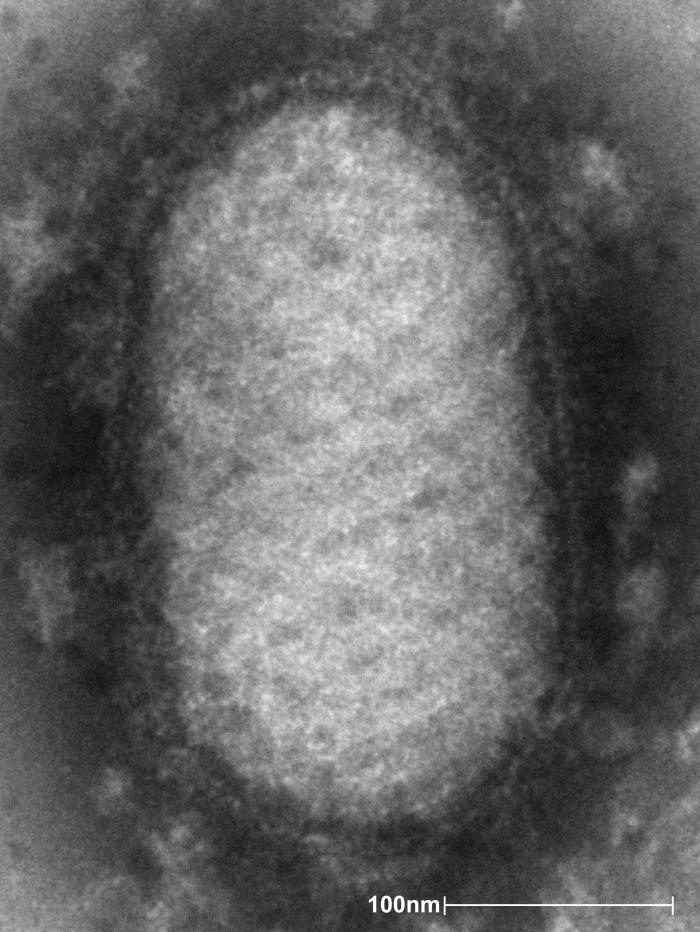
This negative-stained transmission electron micrograph (TEM) image depicted the ultrastructural details of an Orf virus, a member of the genus Parapoxvirus. Note the spiral arrangement of the external tubular ridges on the ovoid-shaped virus particle, or virion.